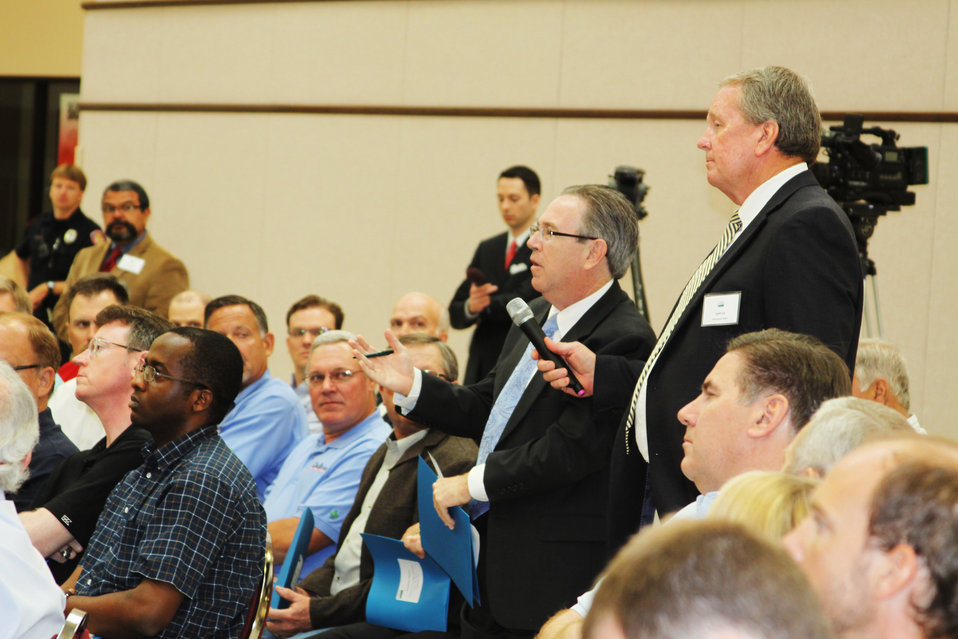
Agriculture Secretary Tom Vilsack answers questions from agriculture leaders at town hall meeting held at Texas Tech University in Lubbock, TX on Friday, Jun. 14, 2013. Secretary Vilsack discussed the need for Congressional action on a Food, Farm and Jobs Bill, as well as a solution to fix America's broken immigration system.